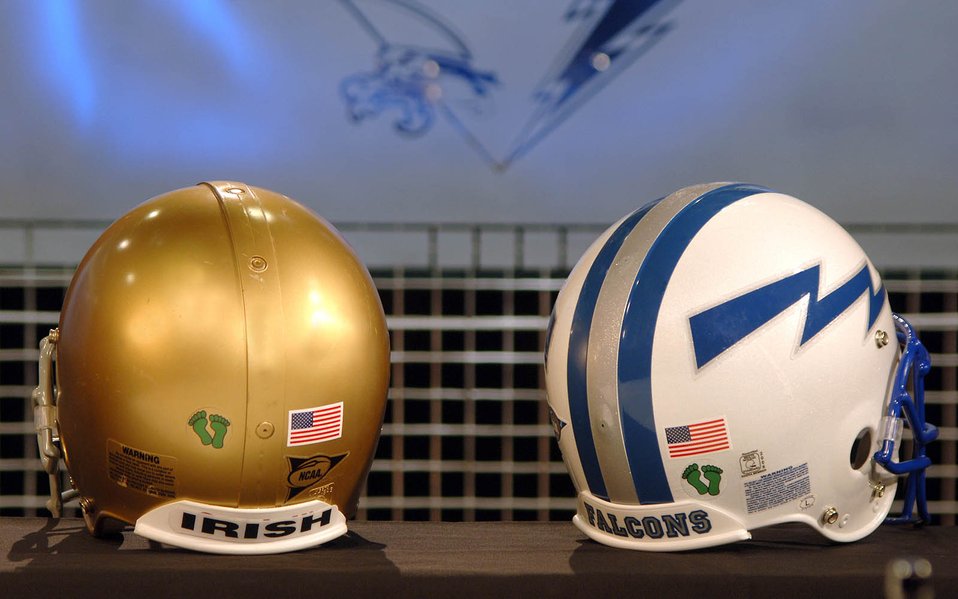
Honoring Service

Notre Dame and Air Force football helmets are shown sporting the six-toe, Jolly Green feet logo representing the Air Force rescue community. The teams will wear the added decal for their Veterans Day game to honor those who serve so other may live.